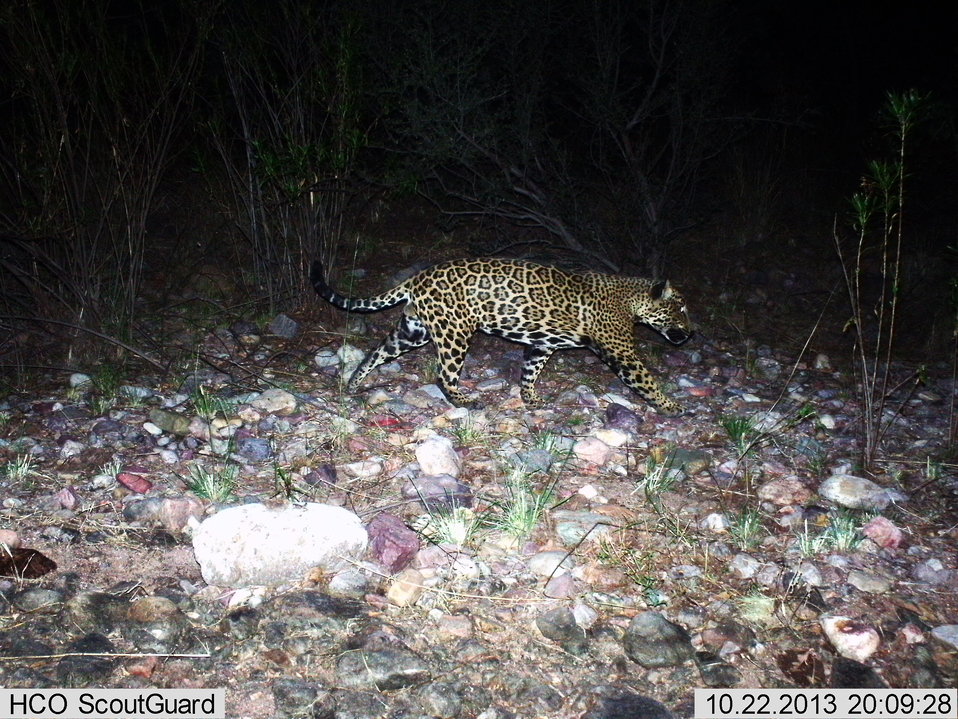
Male jaguar photographed by automatic wildlife cameras in the Santa Rita Mountains on October 22, 2013, as part of a U.S. Fish and Wildlife Service/Department of Homeland Security-funded jaguar survey conducted by University of Arizona. The jaguar has been photographed previously at this location.